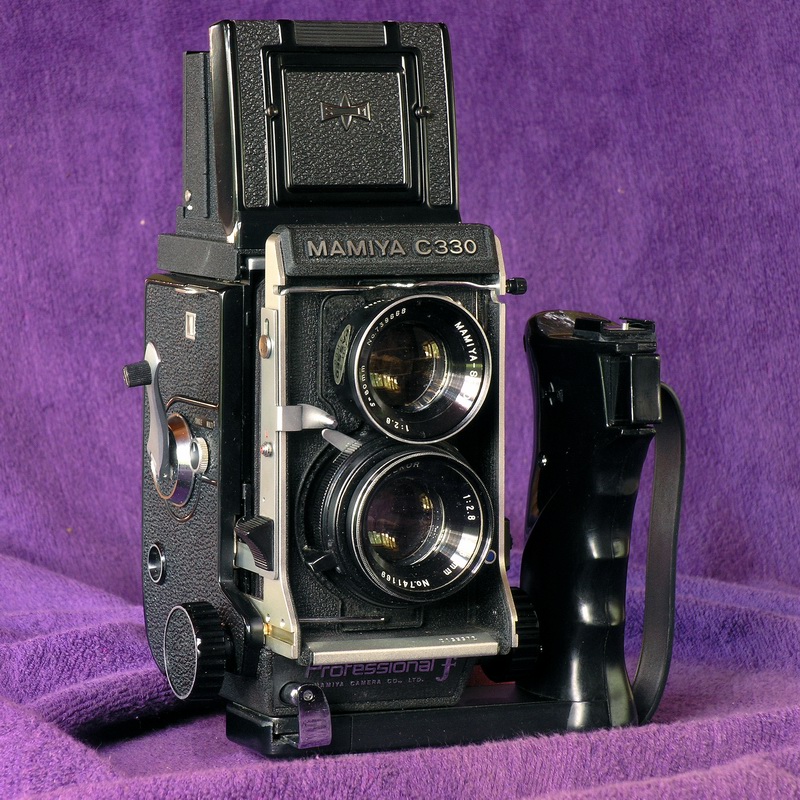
DANYvanvee